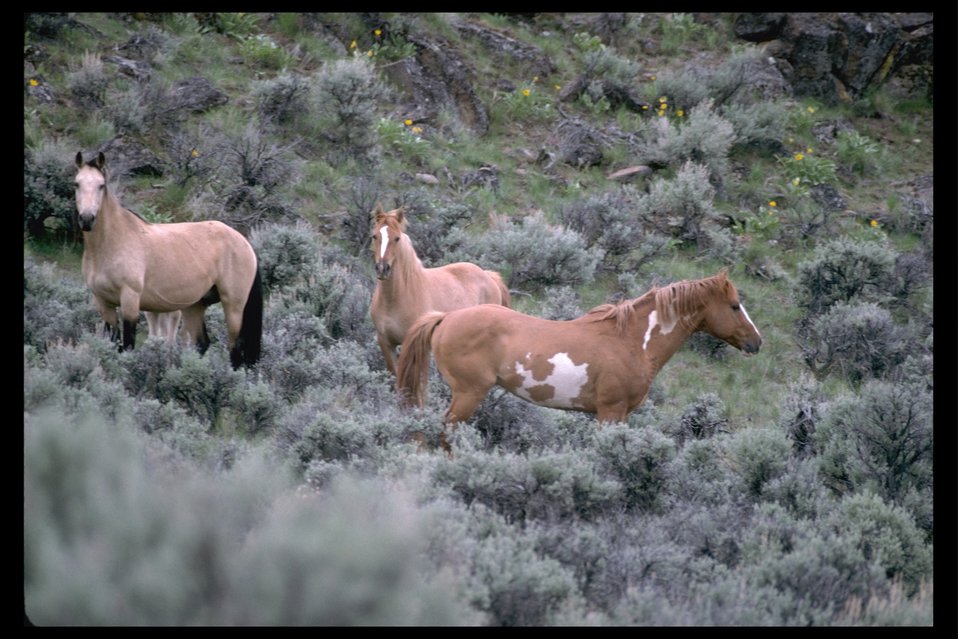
South steens HMA horses on the range.